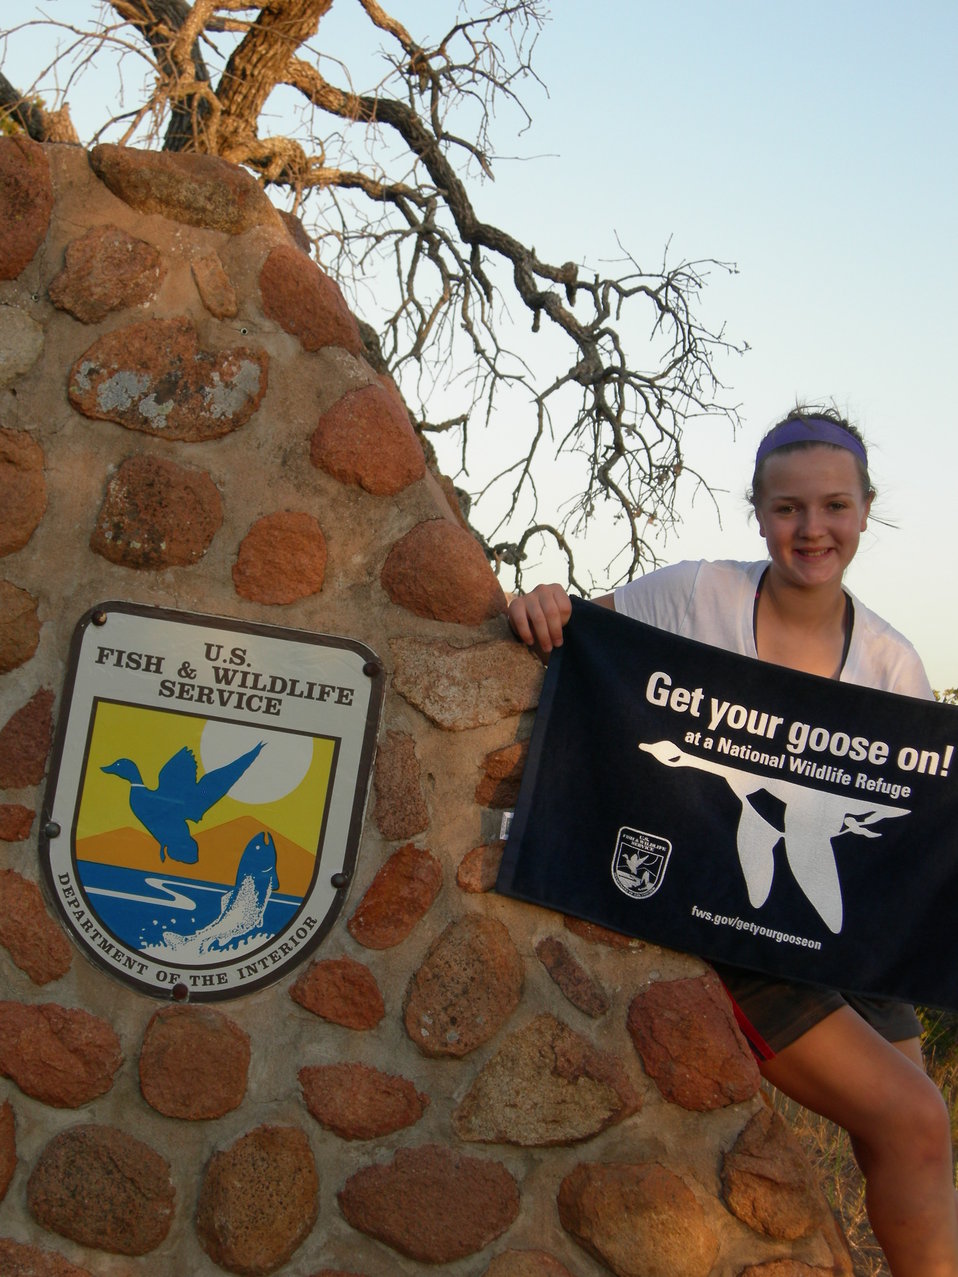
Get Your Goose On!

Wichita Mountains National Wildlife Refuge in Oklahoma.